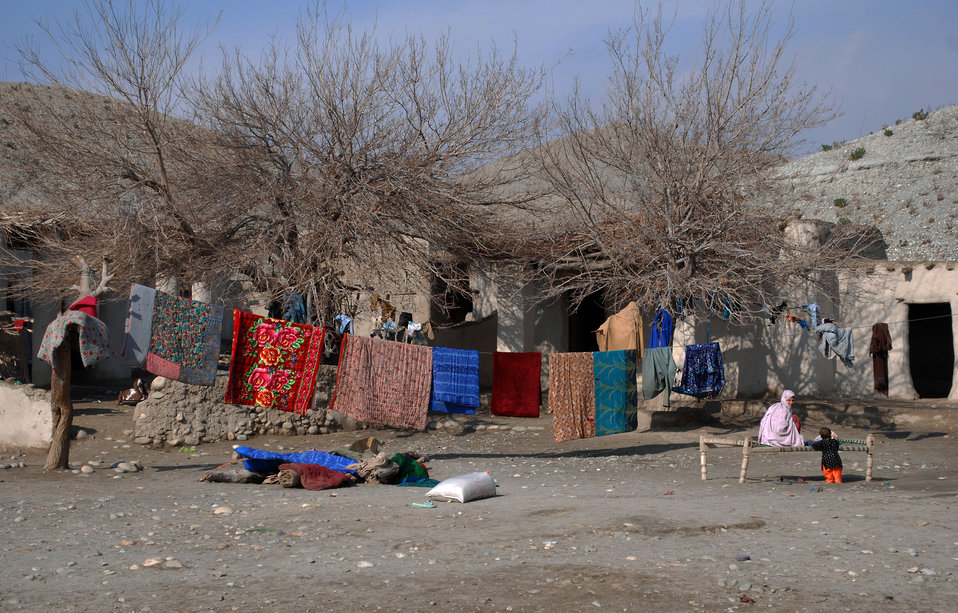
'On the Road' in Nangarhar Province